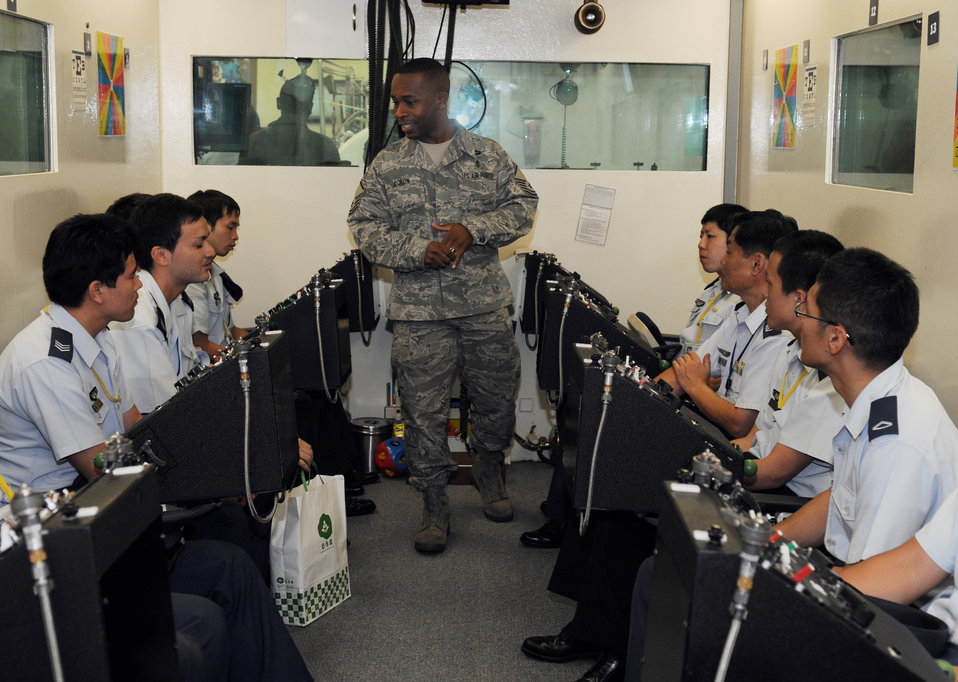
Kadena conducts bilateral cultural exchange

Master Sgt. Charles Acron gives a briefing on the altitude chamber to visiting enlisted Japan Air Self Defense Force members April 15 as part of the bilateral exchange program on Kadena Air Base. Sergeant Acron is the physiology flight chief for the 18th Aerospace Medical Squadron.